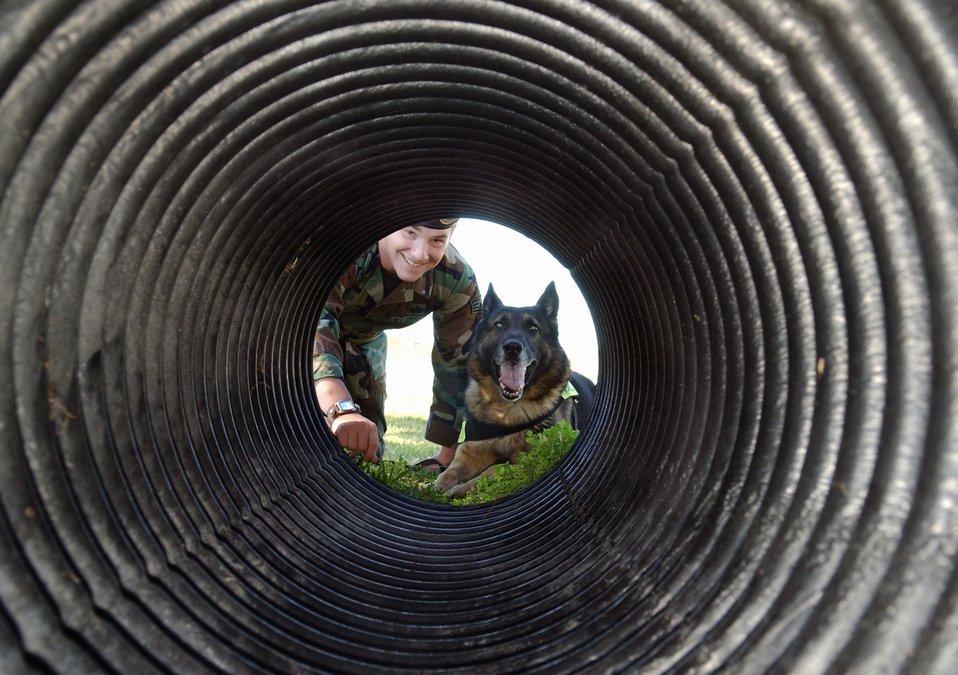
For the dogs

MACDILL AIR FORCE BASE, Fla. (AFPN) -- Staff Sgt. Timothy Bellus, tells his detection patrol dog, Manzo, to go thorough a tunnel here Jan. 31. The tunnel is part of a confidence course to help train the dogs to adapt to different situations. Sergeant Bellus is a military working dog handler with the 6th Security Forces Squadron.